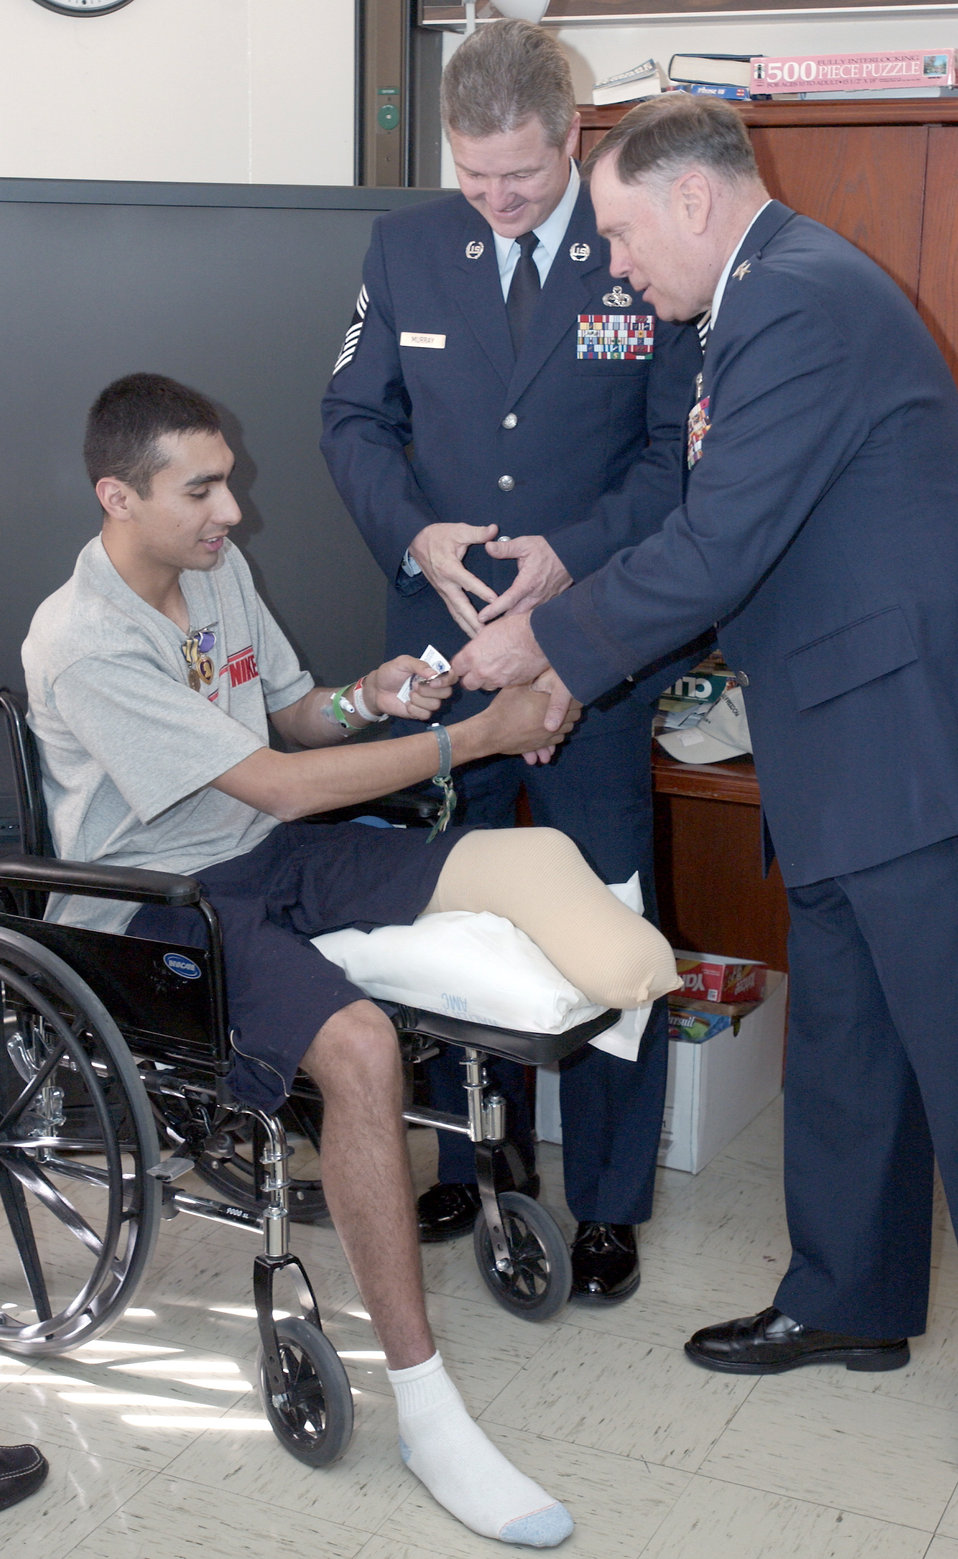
Airman receives Purple Heart

WASHINGTON -- Chief Master Sgt. of the Air Force Gerald R. Murray (center) watches Air Force Chief of Staff Gen. John P. Jumper present his coin to Airman 1st Class Scott Palomino. General Jumper also presented him with a Purple Heart and an Air Force Commendation Medal at Walter Reed Army Medical Center on April 20. Airman Palomino is a surveillance technician from the 603rd Air Control Squadron based at Aviano Air Base, Italy. He was wounded April 10 when a mortar round exploded in his tent at Balad AB, Iraq. As a result of the wound, Airman Palomino's leg had to be amputated below the knee.